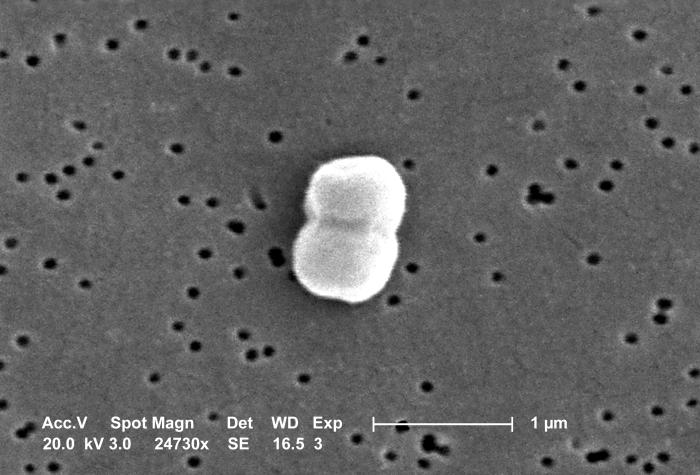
This SEM depicts a pair of aerobic Gram-negative, non-motile Acinetobacter baumannii bacteria under a magnification of 24,730x.